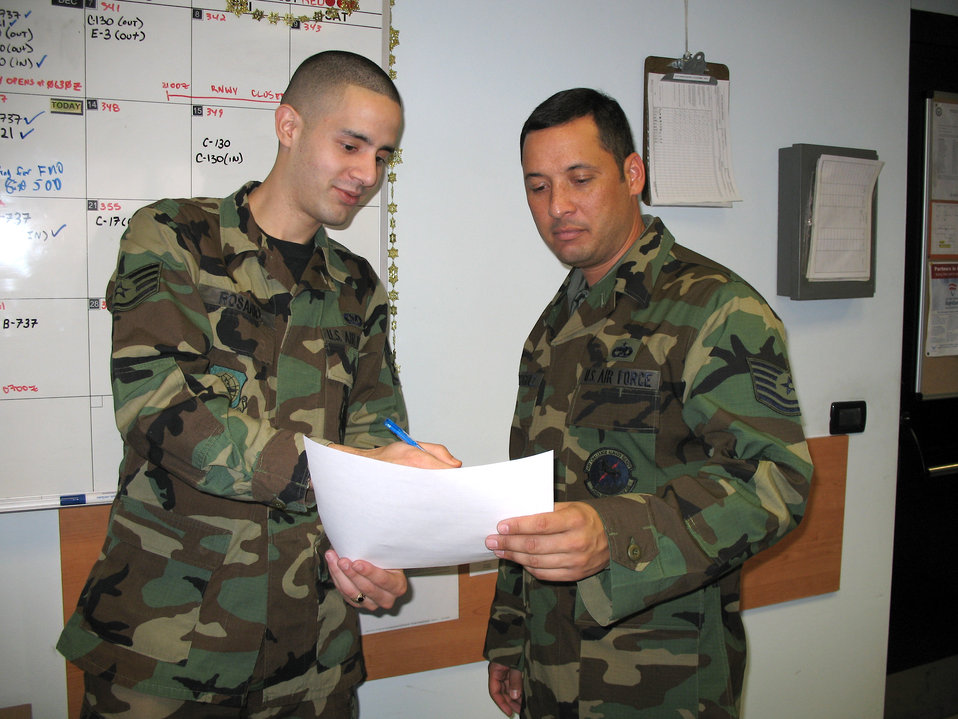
Serving through the season: Staff Sgt. Fredric Rosario

Staff Sgt. Fredric Rosario shows Tech. Sgt. Miguel Rodriguez what time aircraft is scheduled to arrive at Aviano Air Base, Italy.